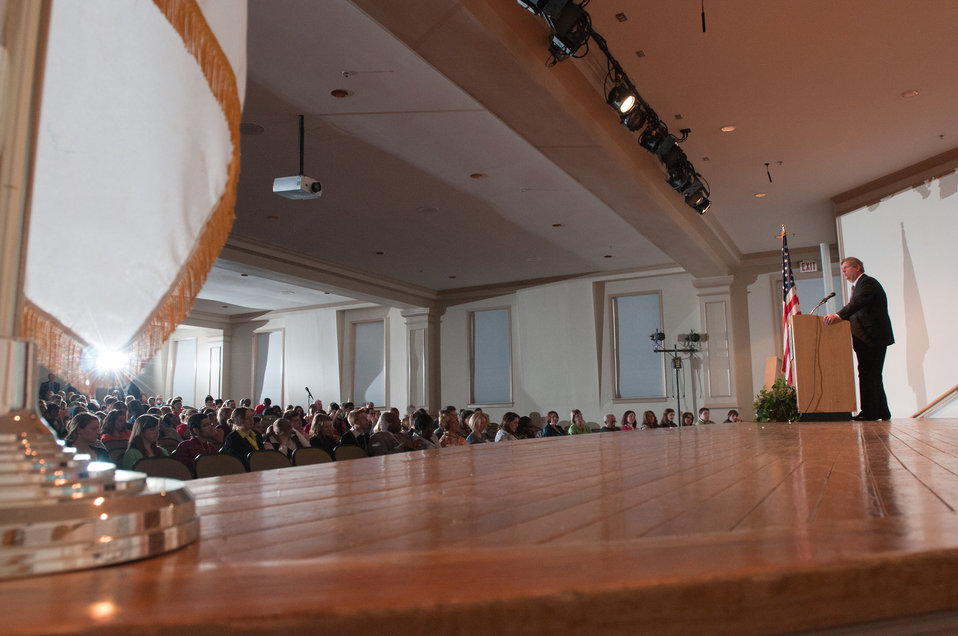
U.S. Department of Agriculture (USDA) Secretary Tom Vilsack delivers the keynote remarks to approximately 300 youth members, Extension Educators and 4-H Adult Volunteers from across the nation, as well as U.S. Territories at the 2013 National 4-H Conference, on Monday, April 8, 2013 in Chevy Chase, MD. Also speaking at the event is Agriculture Departmental Management Office of Advocacy and Outreach Director Carolyn Parker and National Institute of Food and Agriculture Director Dr. Sonny Ramaswamy. The youth delegates are in grades 10-12 (15-19 years old). The purpose of the conference is to 1) engage 4-H youth in personal development experiences that will increase knowledge, resources, and skills; 2) discuss topics affecting youth and 4-H programming nationwide; and 3) empower and mobilize 4-H youth to create positive social change in their communities in a meaningful and genuine way. The conference also reinforces the rich history of 4-H and its valuable tie to USDA, Cooperative Extension and the Land-Grant University System.